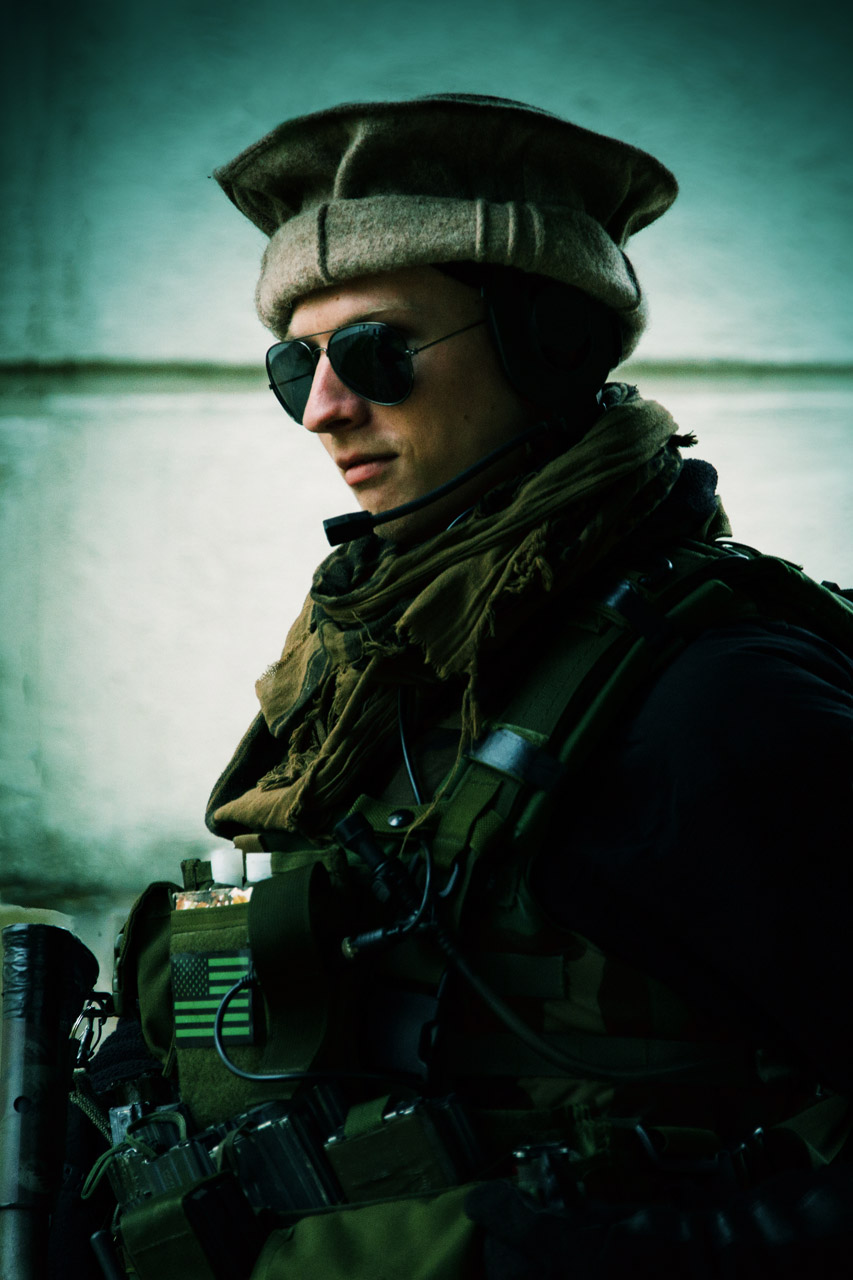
Special soldier

Special army force soldier well equipped.